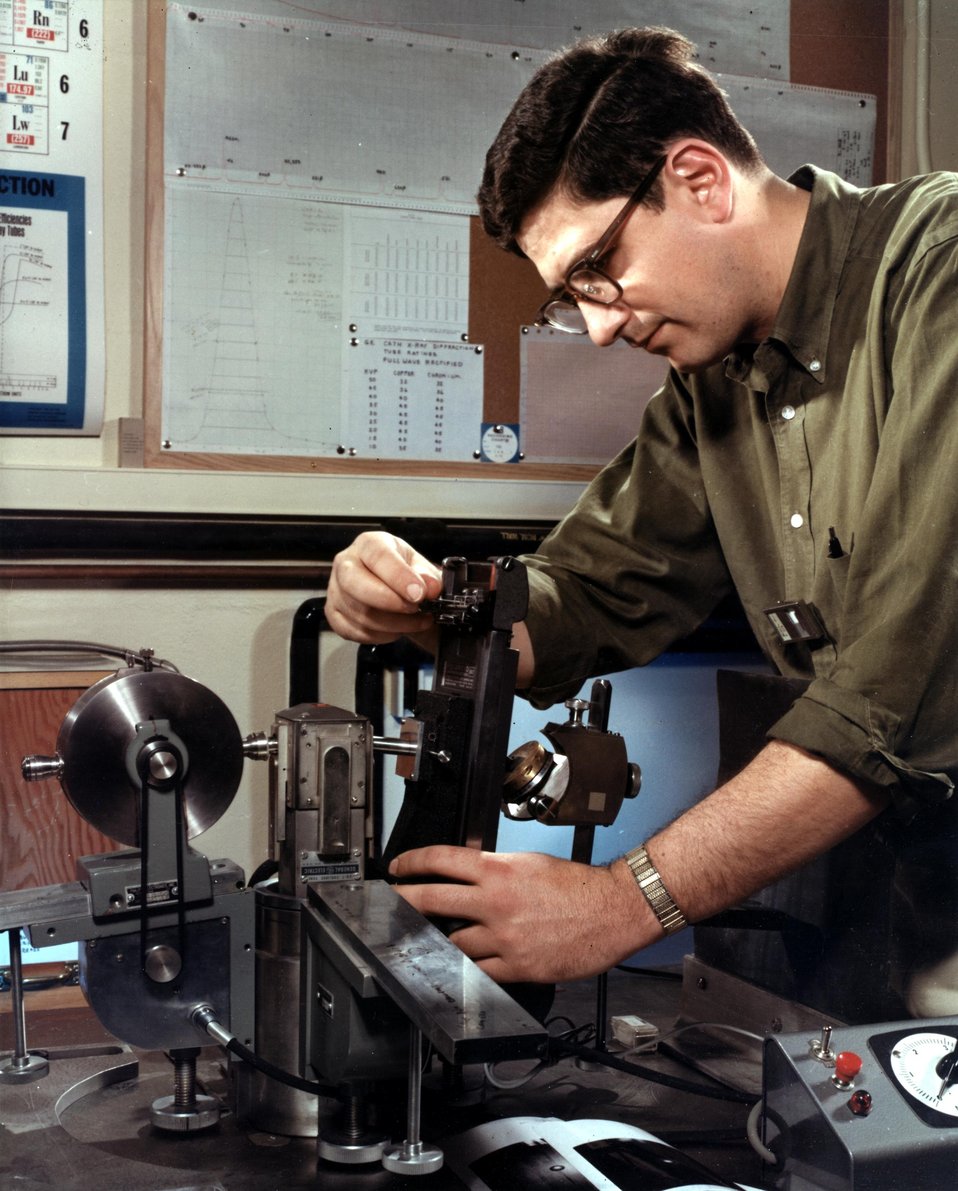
X-ray diffraction techniques applied to a study of the orientation and perfection of a single crystal.